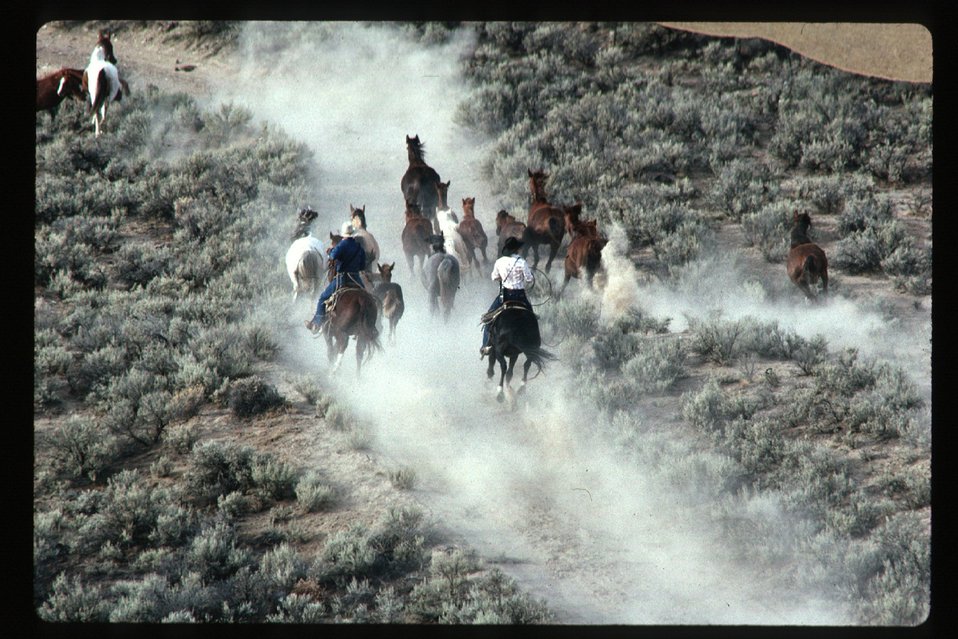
Wild horse roundup Wild Horse and Burro Adoption Program LSRD Lower Snake River District